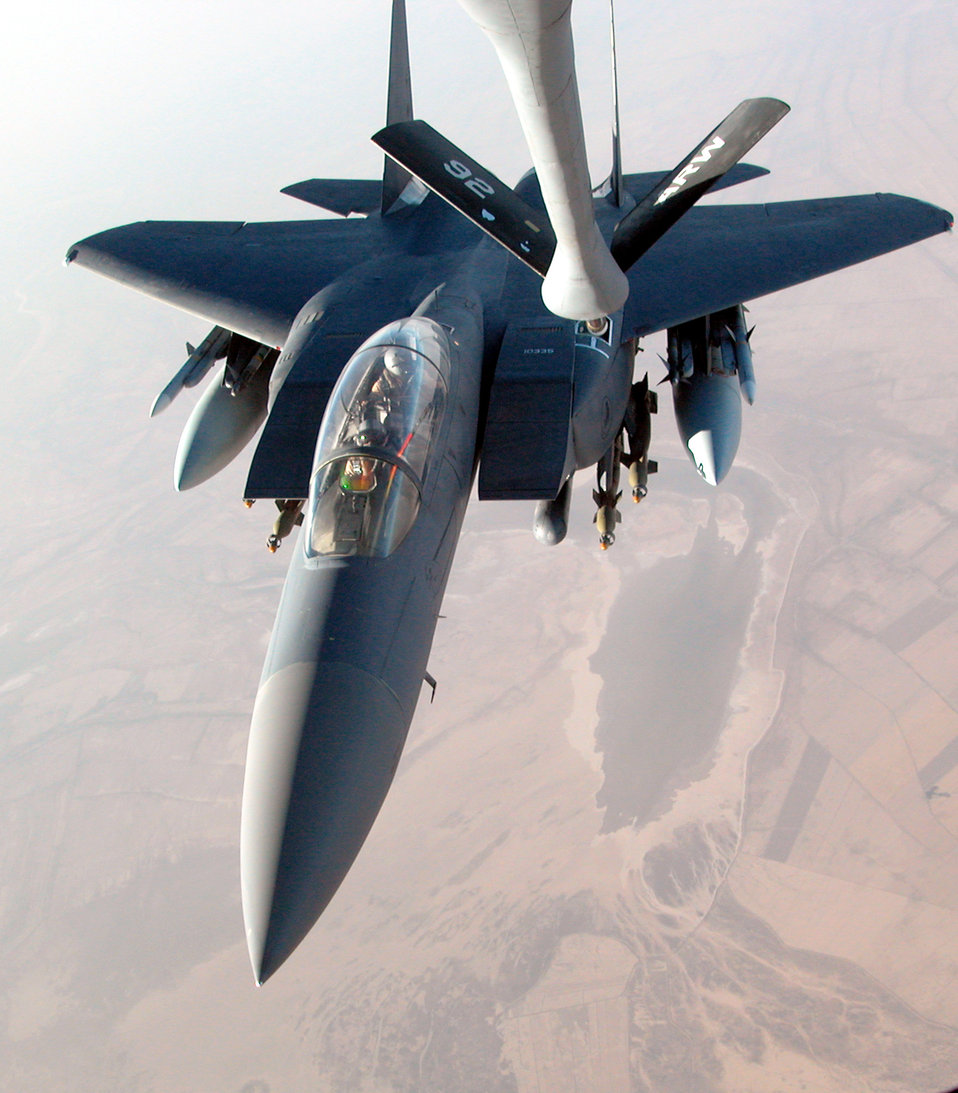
Feeding the Eagle

OPERATION IRAQI FREEDOM (AFPN) -- A KC-135 Stratotanker from the 380th Air Expeditionary Wing refuels an F-15E Strike Eagle on a combat mission over Iraq.